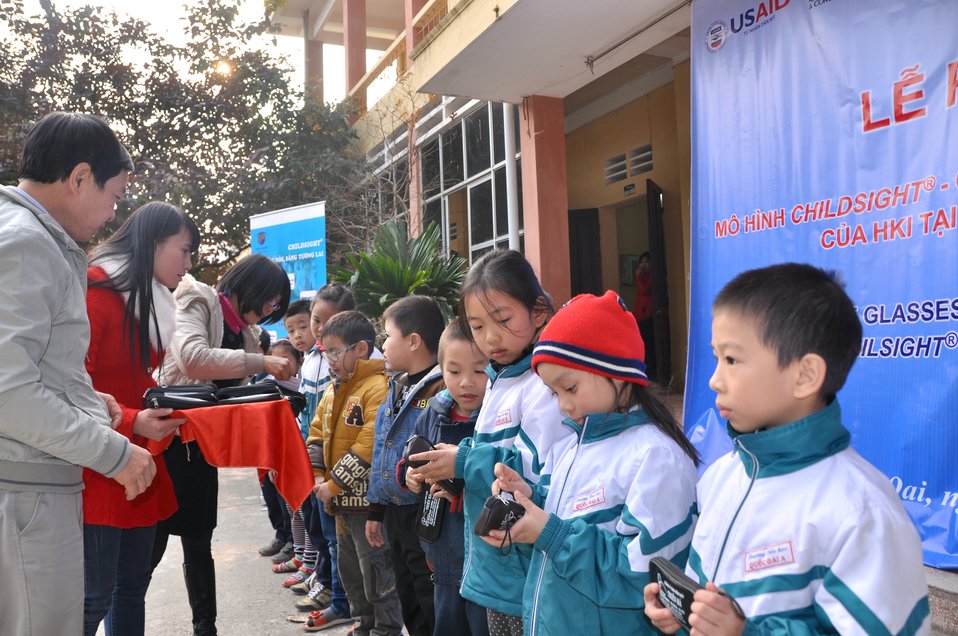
USAID supports distribution of eyeglasses to pupils and teachers in Quoc Oai, Hanoi.

Kieu Phu Junior Secondary School, Quoc Hoai, Hanoi, December 23, 2013.